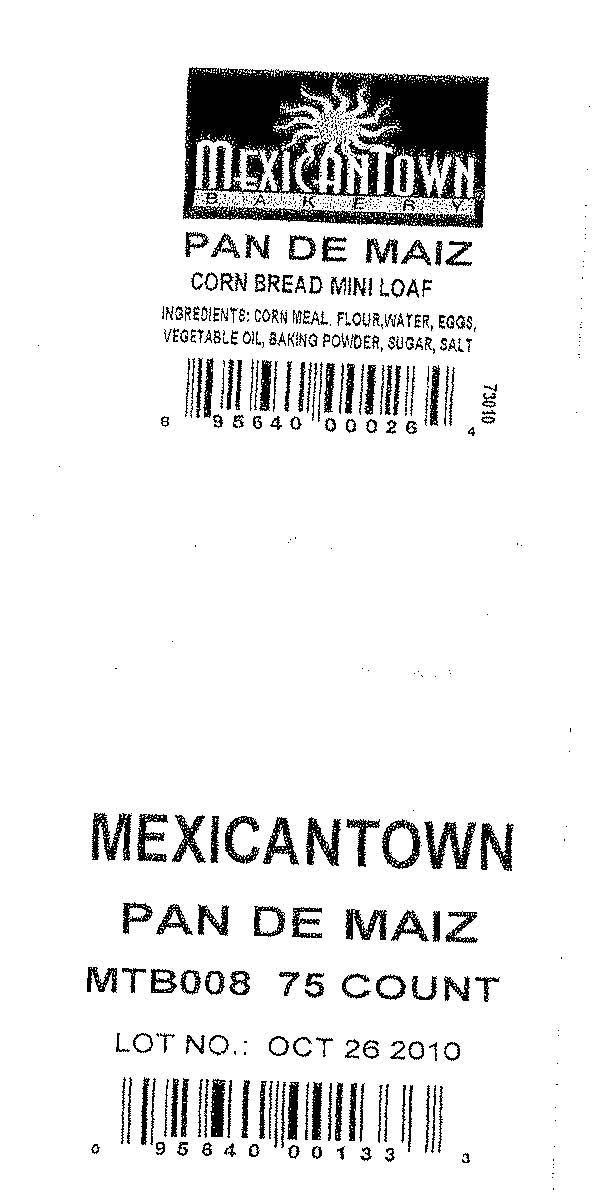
RECALLED - Mexicantown Pan De Miaz

April 7, 2011 - Product Recall - Mexicantown Whole Issues Allergy Alert On Undeclared Pecans In Pan Nuez And Undeclared Milk In Magdalena, Pan De Maiz, YoyoPan Nuez, And Tacos De Pan Danes.